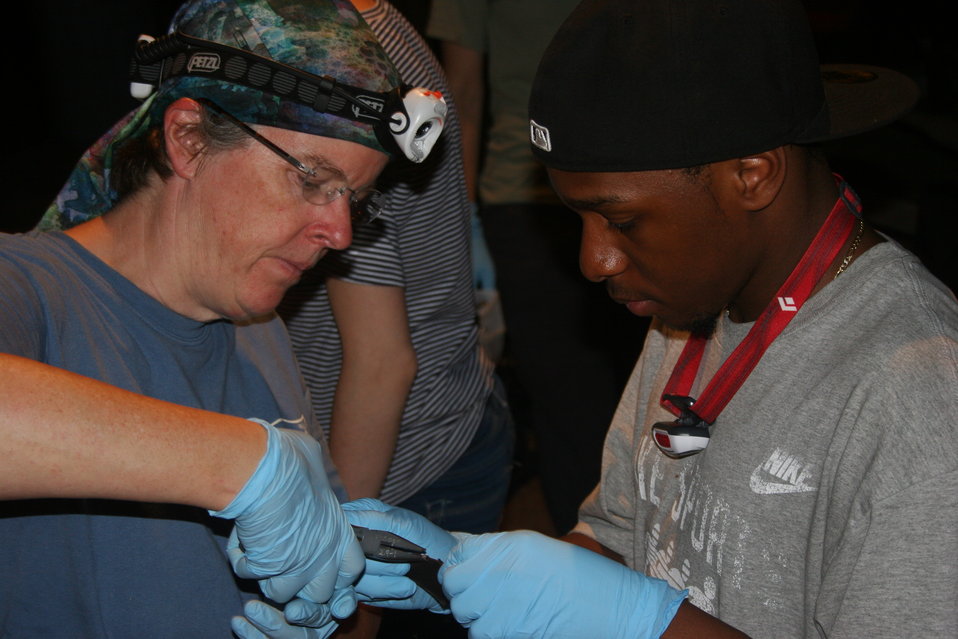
Applying wing band

NH Fish and Game Department biologist Emily Burnkhurst and Boston University technician Leon Spencer apply wing band to little brown bat. The band will help biologists and researchers identify individual bats from year to year.